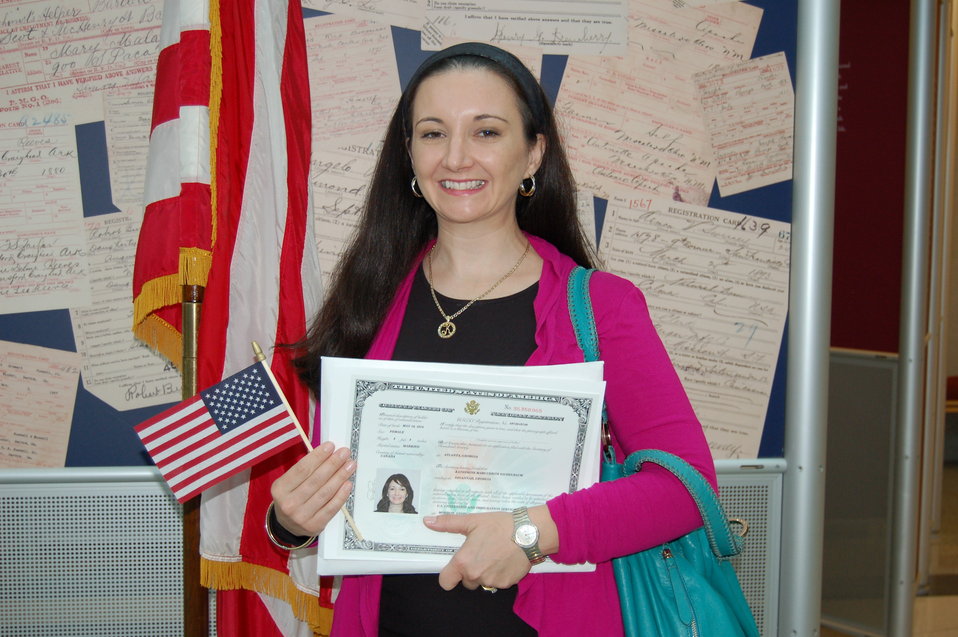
New Citizens